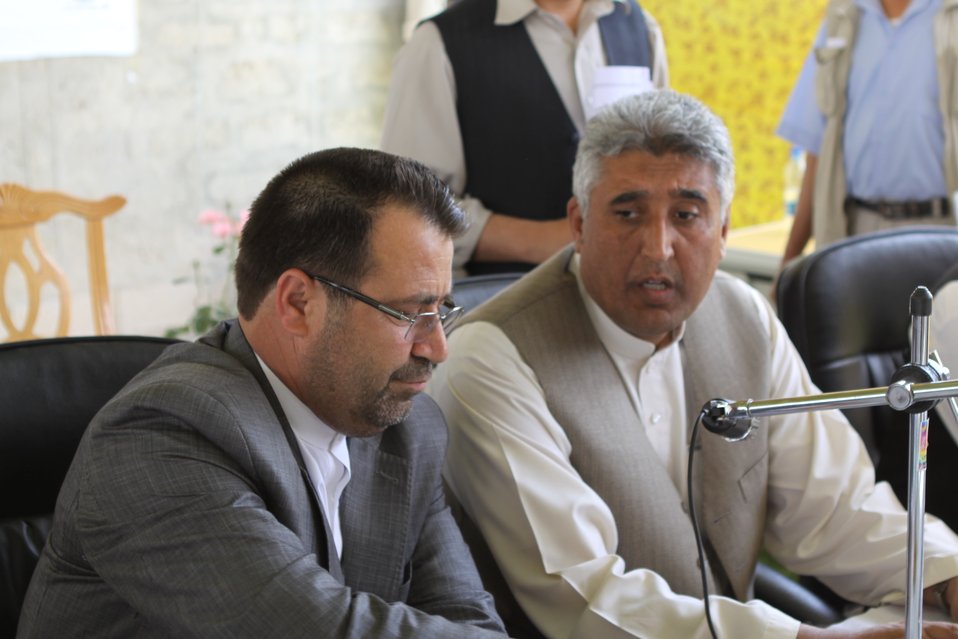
Bolan Poultry Farm